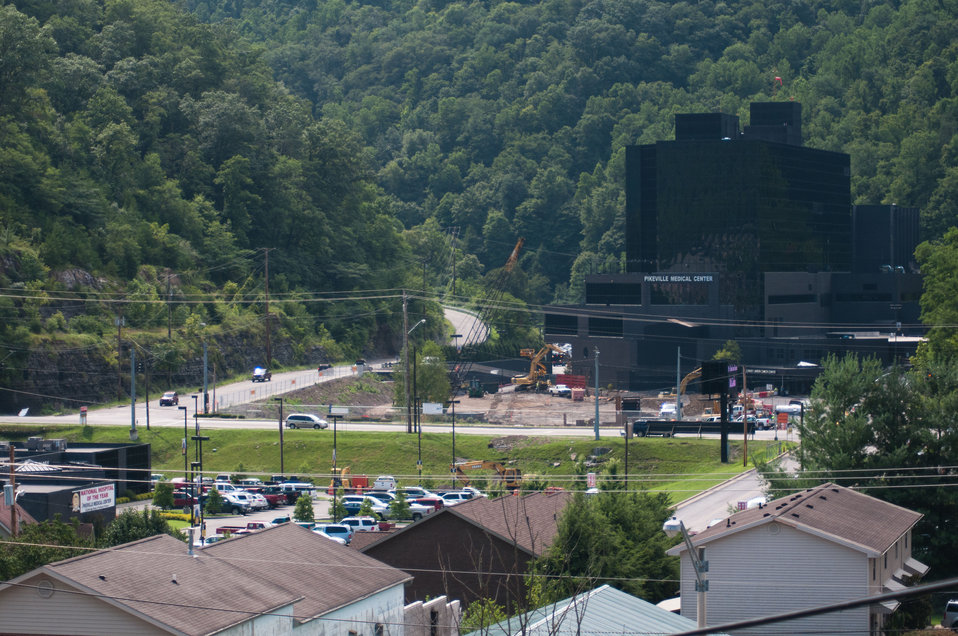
From across the horseshoe shaped town of Pikeville, KY, various buildings, parking lots, temporary walkways, and above ground construction of the Pikeville Medical Center (PMC) expansion project, on Tuesday, July 12, 2011, in Pikeville, KY. After months of infrastructure construction and rain delays, one of Kentucky’s largest American Recovery and Reinvestment Act (ARRA) projects is under way. The $44.6 million Community Facilities Loan will finance construction of a new medical office building and parking garage. The new medical office building will house outpatient surgery, endoscopy, surgical support and provide exam, waiting and office space for 23 primary and specialty care physicians. It also will contain a medical research center to support existing research – in conjunction with Pikeville College – on health disparities, genetic research related to the prevalence of cancer and other areas, including drug and treatment trials. The new parking garage with more than 1,000 spaces will be built adjacent to the new medical building, eliminating the need to shuttle patients back and forth from remote parking areas. The new garage will provide closer and easier proximity to medical and hospital services for all patients.
Wayne Rutherford, County Judge-Executive for Pike County, says funding from ARRA is a boon for his county because it will create jobs.

“This is great for Pike County’s economy. We know we have a great hospital, and with this support, it will be even better,” said Rutherford. “The unemployment rate here is above the state average and this will stimulate jobs. There will be construction, which means lots of jobs on the front end – and even more once it is built.”

Pike County is one of Kentucky’s persistent poverty counties and the current medical facility provides health care services for a rural population of more than 68,000. This project will create 1,430 direct and indirect construction jobs, in addition to 97 long-term jobs. It is scheduled to be completed in December 2012.

“This project is a prime example of the ARRA monies being utilized for much-needed health care facility expansion in an economically-depressed region of Eastern Kentucky and Appalachia,” said Tom Fern, State Director for Rural Development in Kentucky. “This hospital has received national recognition for its quality of care, and this money will allow them to expand and build upon their success and continue providing quality health care services to the region.”

PMC was named National Hospital of the Year by the American Alliance of Healthcare Providers in November 2009. The hospital was among 400 elite health care facilities to apply for this prestigious honor. To earn this recognition, PMC competed against more than 400 hospitals, including the Mayo Clinic, the John Hopkins Hospital, Cedar-Sinai Medical Center, the Cleveland Clinic, Duke University Medical Center and Vanderbilt University.

Pikeville City Manager Donovan Blackburn said the medical center is the largest employer in Pikeville and contributes nearly $2 million to the city through the payment of occupational taxes. He went on to say that Pikeville Medical’s success is also the city’s success because as other cities struggle with dwindling revenues, Pikeville has actually seen growth.

“This is a regional medical center that is very important to the city. Pikeville is a legal, financial and education hub for Eastern Kentucky and a gateway to rural communities in Virginia and West Virginia. There are half a million within a 50-mile radius – so it’s not just local people that depend on this facility,” said Blackburn. “From a regional standpoint it adds volume from a jobs standpoint. Everybody in this county knows someone or has family that works for Pikeville Medical Center.
“People in this area used to have to go out of the area for good jobs and quality medical services, but Pikeville Medical has changed that,” added Blackburn. 'And it has impact on other parts of the city’s economy – hotels, restaurants and retail. It increases the quality of life tenfold.”

The Recovery Act was designed to spend money gradually over time in order to sustain a true recovery – with peak spending to occur early this year. While the experts agree that ARRA is already responsible for creating or saving approximately two million jobs, about 75 percent of recipients that reported on their Recover Act spending indicated their projects are less than half complete, meaning there is even more job impact from those dollars to come.